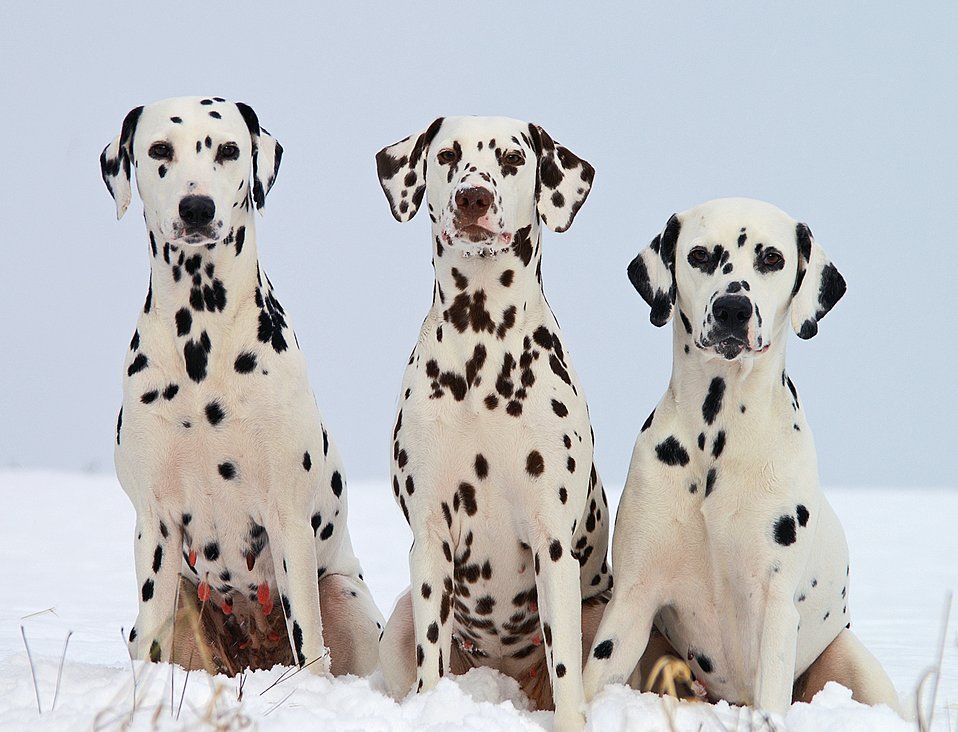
Die verschiedenen Farben eines Dalmatiners